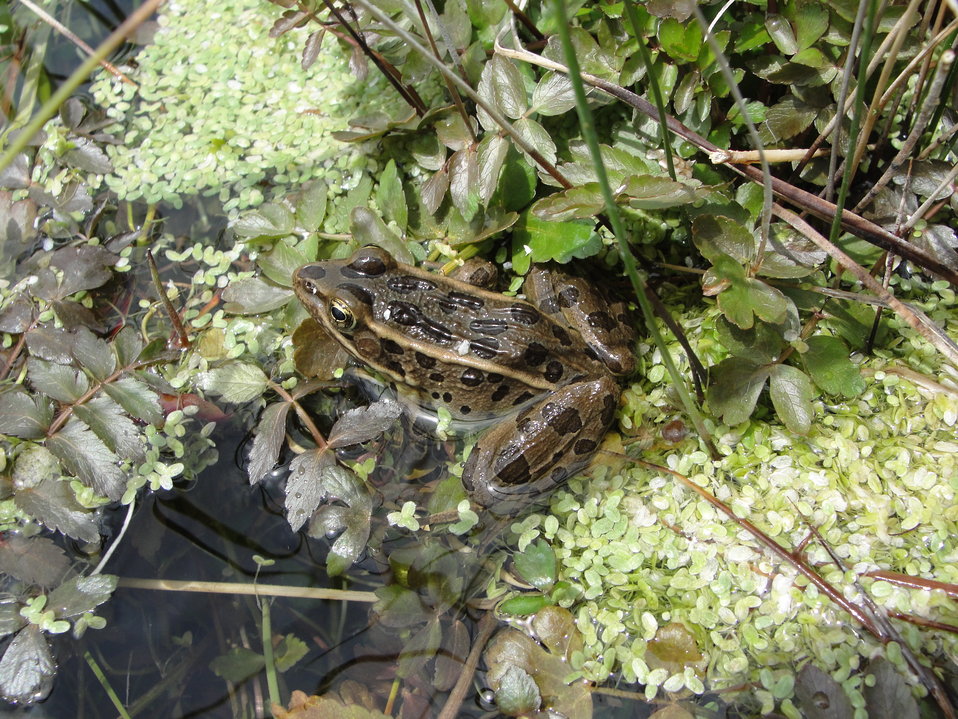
Northern leopard frog (Rana pipiens ) occurring in Spring Valley, Nevada. Date of photo 5-18-2010.